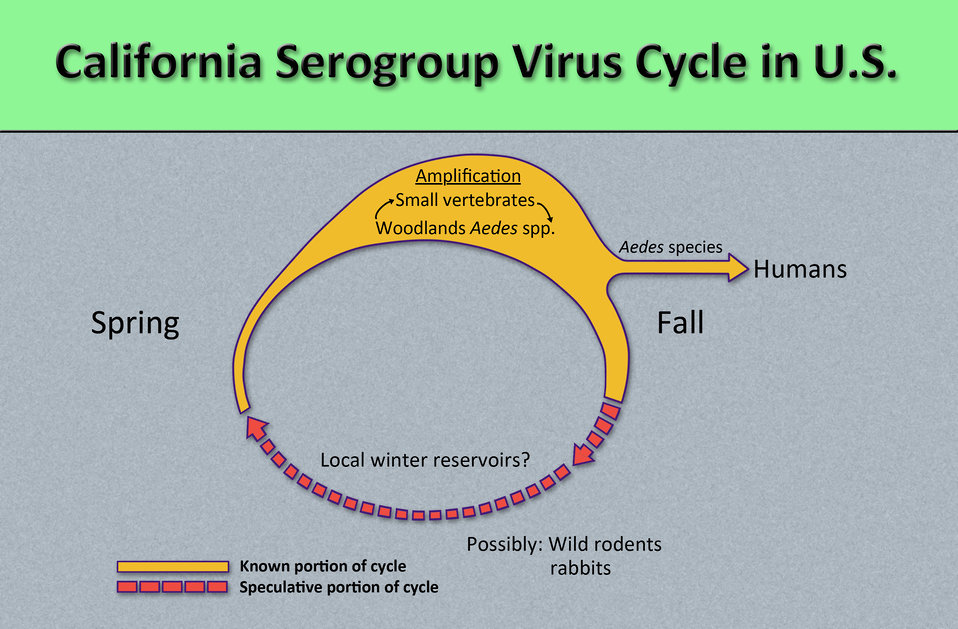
This diagram illustrates the cyclical method that the arboviral California serogroup viruses (CALV) adopt in order to replicate using predominantly, the Aedes spp. mosquitoes to transmit the viruses to small woodland vertebrates, in order to amplify the viral populations prior to infecting human beings through the bite of a virus-carrying Aedes sp. mosquito.